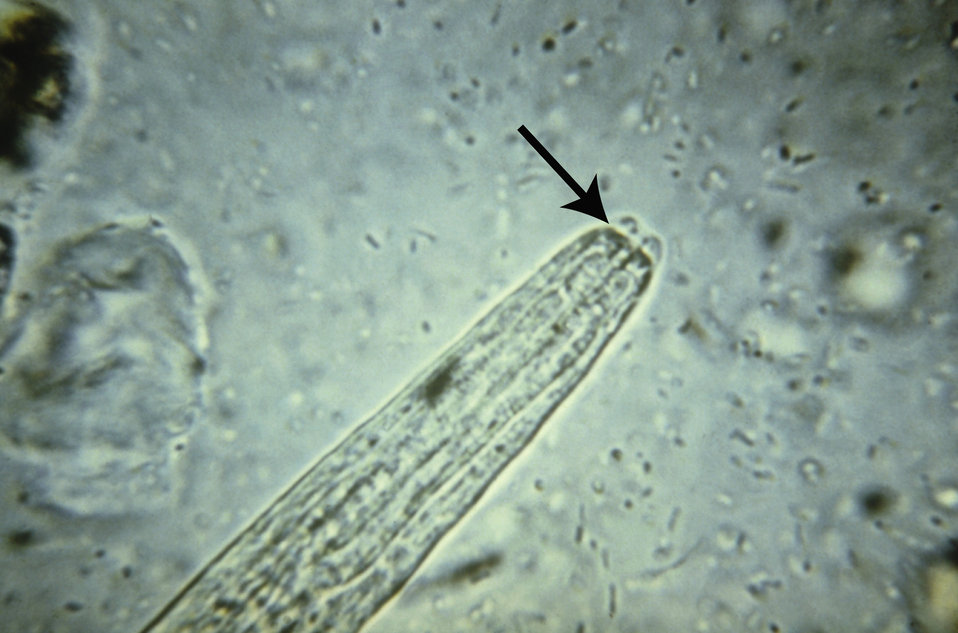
Note the short buccal cavity of this rhabditiform, i.e., early noninfectious stage larva of a Strongyloides sp. nematode.